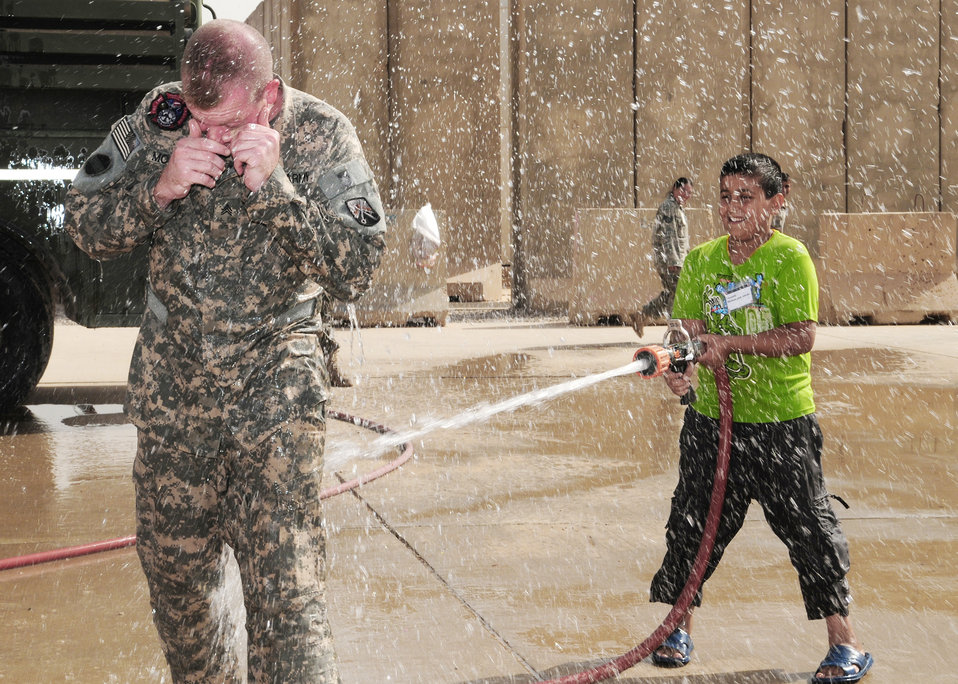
Iraqi children come out to play at Joint Base Balad

An Iraqi boy soaks Army Sgt. Joshua McGinnis during Iraqi Children's Day Oct. 10, 2009, at Joint Base Balad, Iraq. Sergeant McGinnis is a 23rd Ordnance Company firefighter deployed from Grafenwoehr, Germany.